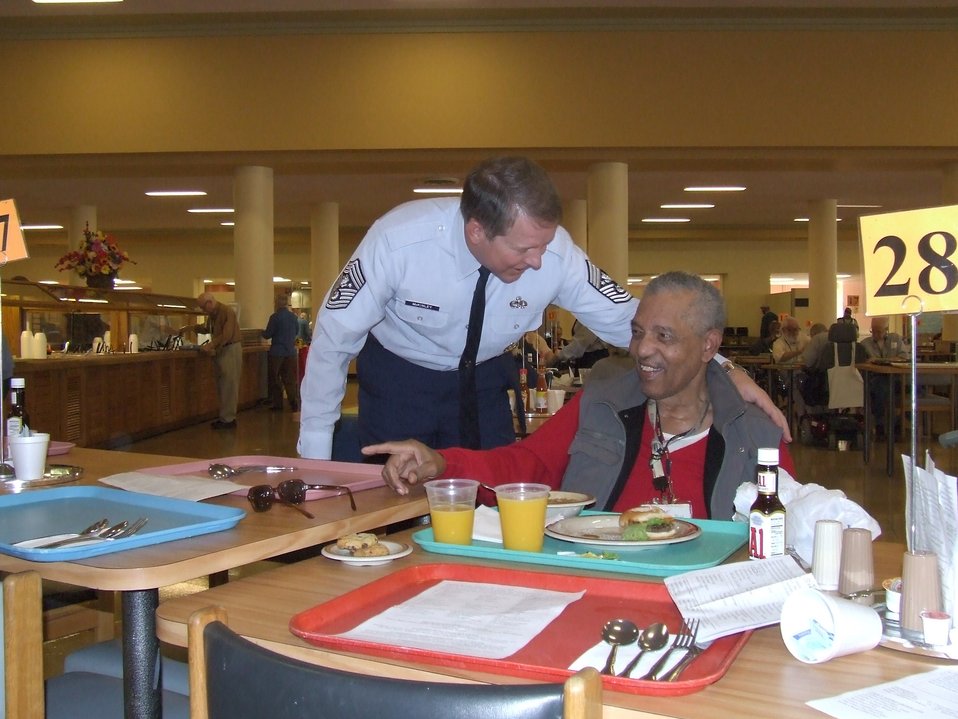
CMSAF visits Armed Forces Retirement Home

Chief Master Sgt. of the Air Force Rodney J. McKinley shares a laugh with Navy veteran Bill Palmer at the Armed Forces Retirement Home in Washington D.C. The chief and his entire staff visited the home Nov. 10 to honor the veterans there.